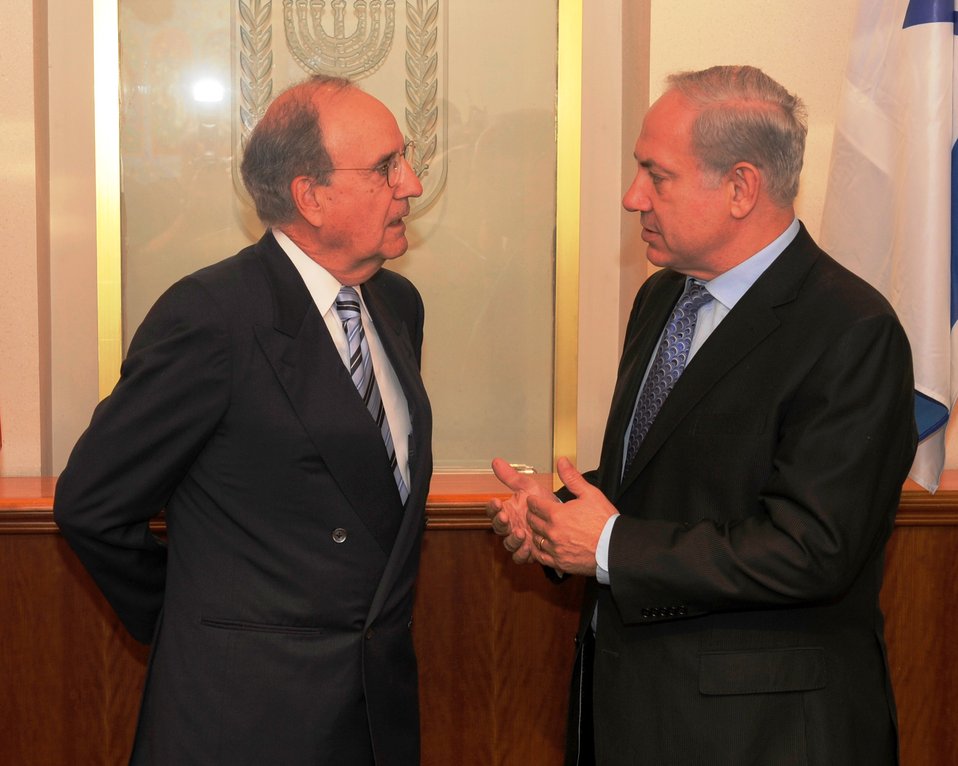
Israeli Prime Minister Netanyahu Speaks With Special Envoy Mitchell

Israeli Prime Minister Benjamin Netanyahu meets with U.S. Special Envoy for Middle East Peace George Mitchell at the Prime Minister's office in Jerusalem on June 17, 2010.